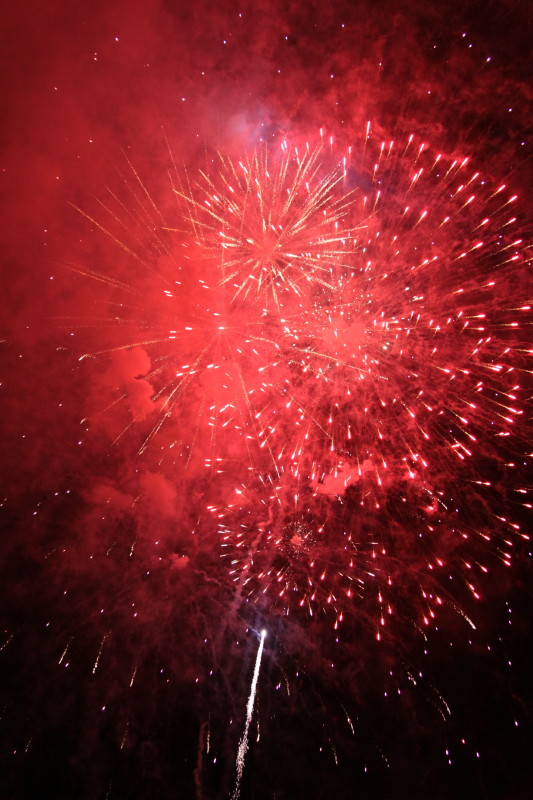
Fireworks light up the sky at the U.S. Embassy Caracas in Venezuela's U.S. Independence Day celebration on June 30, 2010.